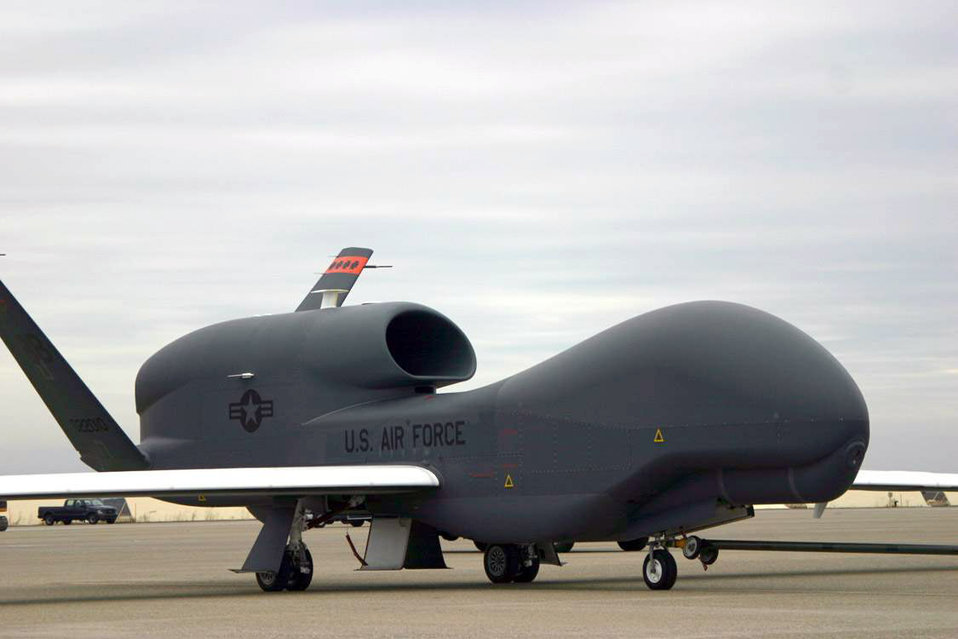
Global Hawk

BEALE AIR FORCE BASE, Calif. -- The Global Hawk Unmanned Aerial Vehicle provides Air Force and joint battlefield commanders near real-time, high-resolution intelligence, surveillance and reconnaissance imagery. The 12th Reconnaissance Squadron here is the home unit for the Global Hawk mission.